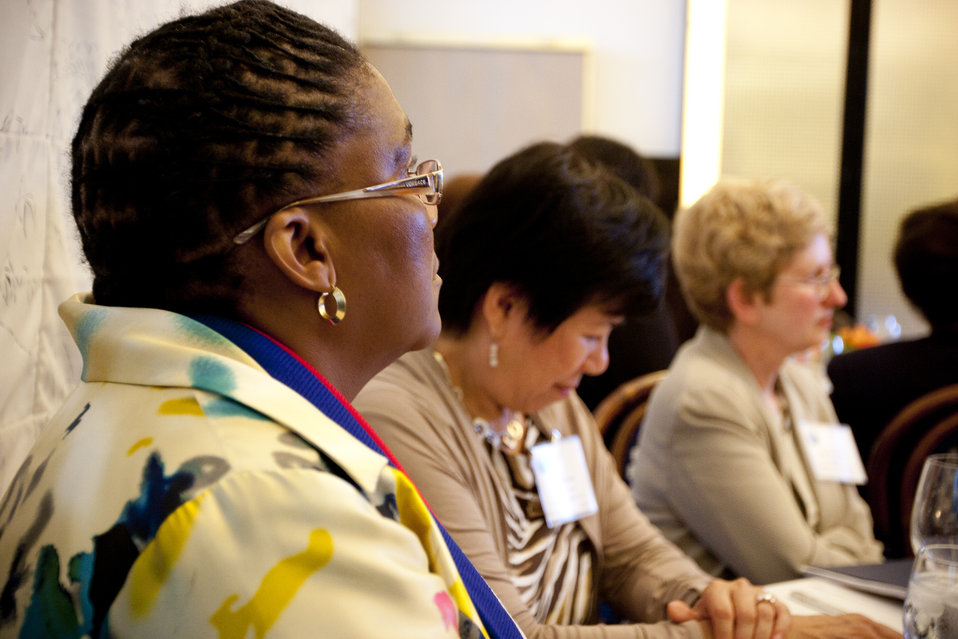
WomenandEnergy 52